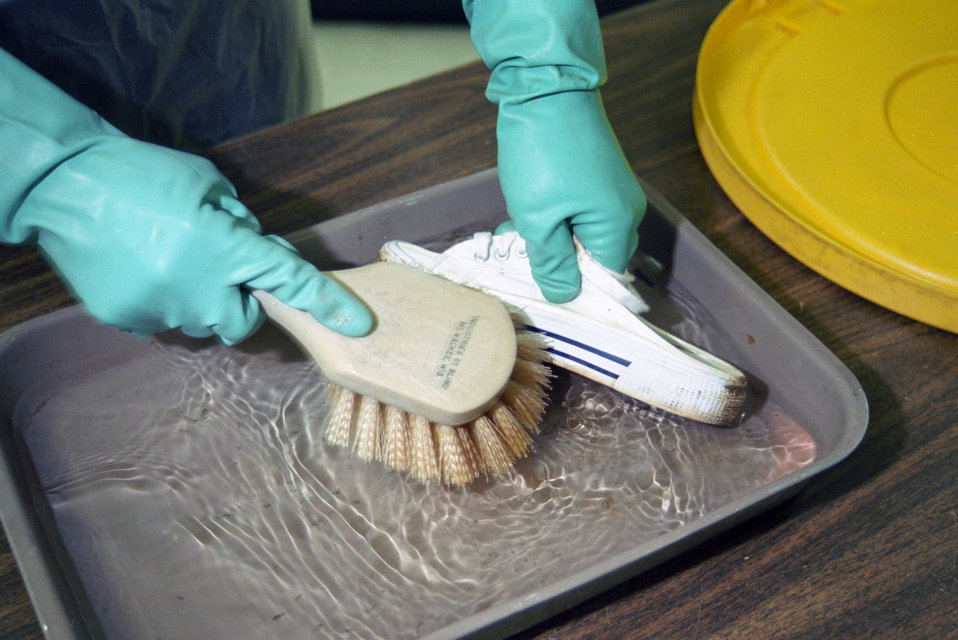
U.S. Department of Agriculture (USDA) Animal and Plant Health Inspection Service (APHIS) inspector disinfects a pair of shoes confiscated at customs entry at Washington Dulles International Airport in Chantilly, VA on March 14, 2001. Foot and Mouth Disease can be brought into the U.S. through contraband food and from travelers’ shoes. American tourists and European visitors that have trod through contaminated fields risk bringing the devastating disease into this country. USDA’s APHIS inspectors working with U.S. Customs and Border Protection carefully monitor incoming visitors and returning American tourists.